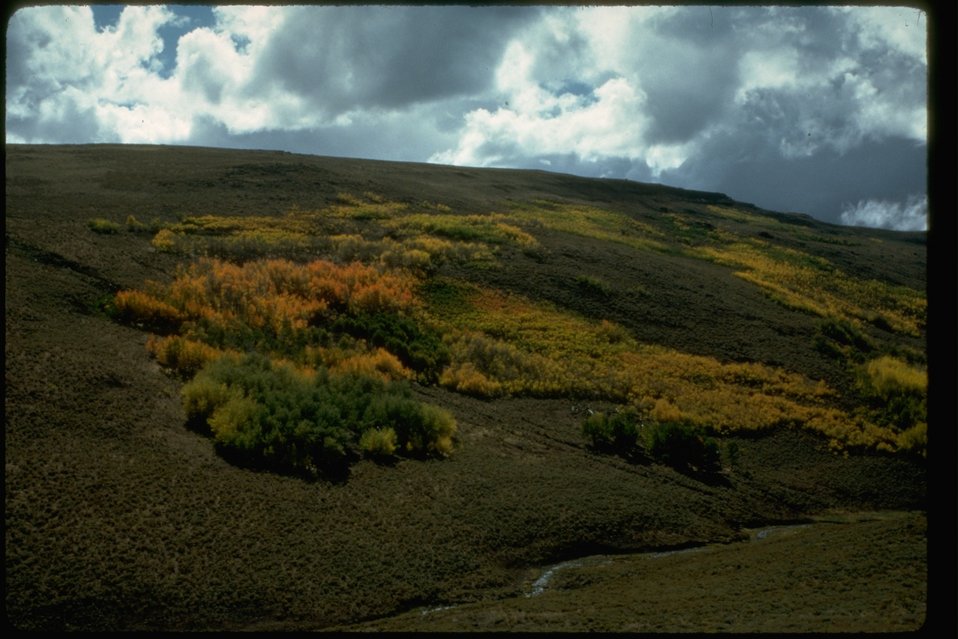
Disaster Peak near the head waters of Big Trout Creek. The Aspen trees' leaves have their fall colors. (Burns District, but Vale District administrated) OR 3-153